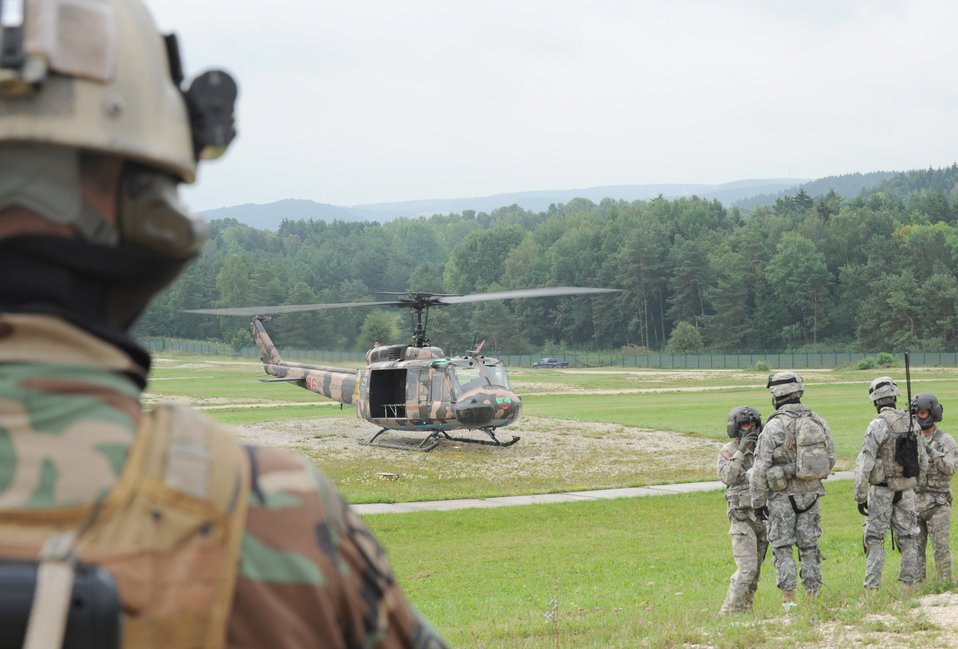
Close air support training

Air Force and Army members wait to load in a UH-1 Iroquois for an air assault mission scenario Aug. 3, 2010, during exercise Allied Strike 10 at Hohenfels, Germany.